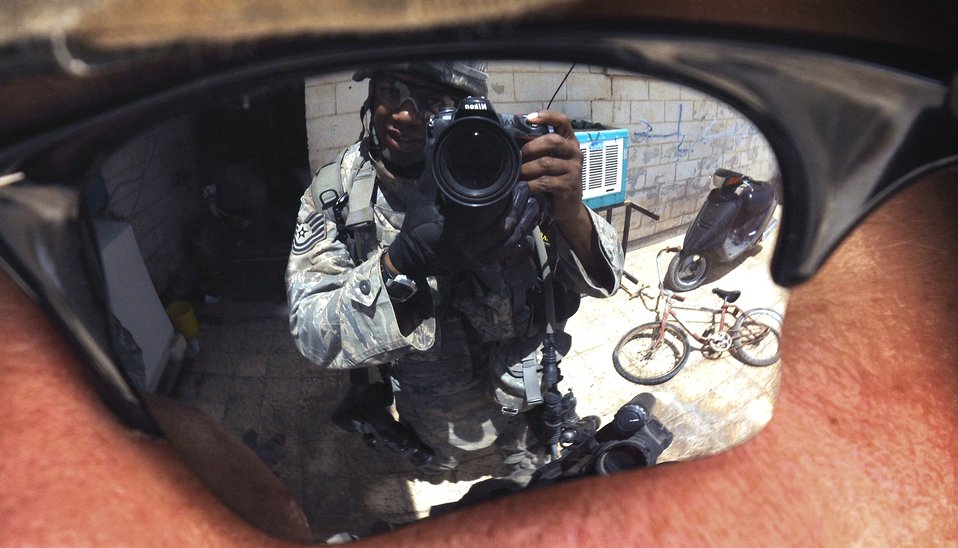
Through the looking glass

While on patrol in the Sadr City district of Baghdad June 6 with U.S. Army Staff Sgt. Michael Horst, Tech. Sgt. Cohen Young uses sunglasses to take a self portrait. Sergeant Horst is assigned to Wisconsin's Army National Guard and Sergeant Young is with the Air Force Office of Public Affairs.